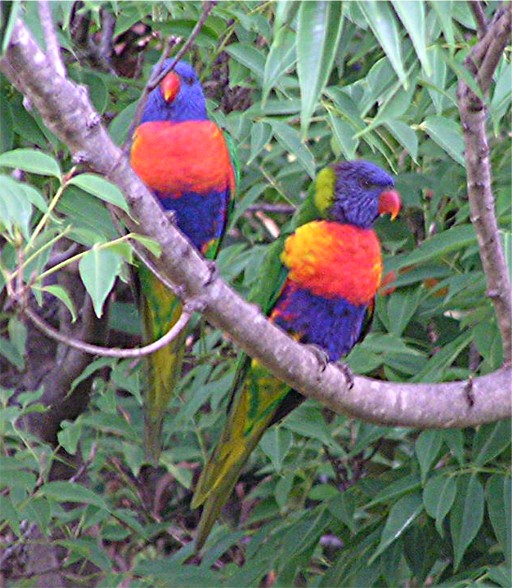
RainbowLorikeet